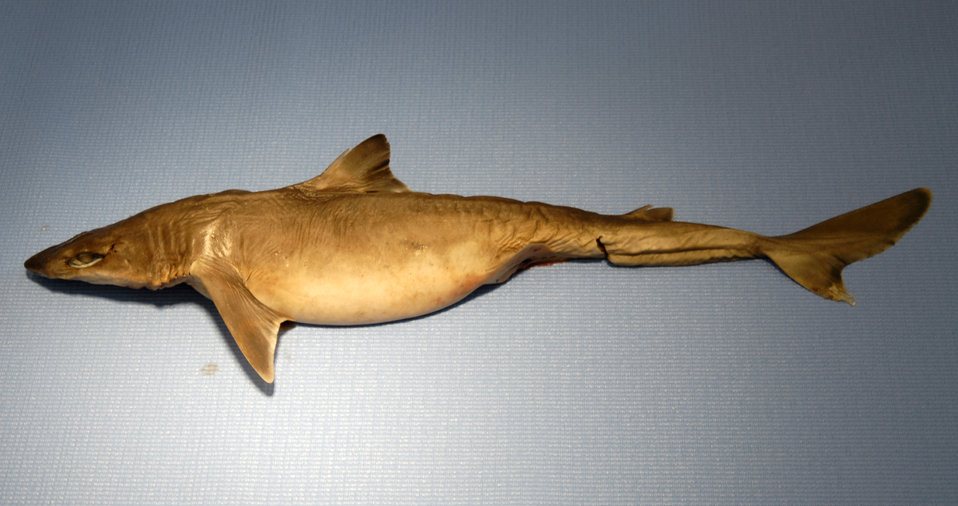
Shortspine dogfish or shortspine spurdog ( Squalus mitsukurii )